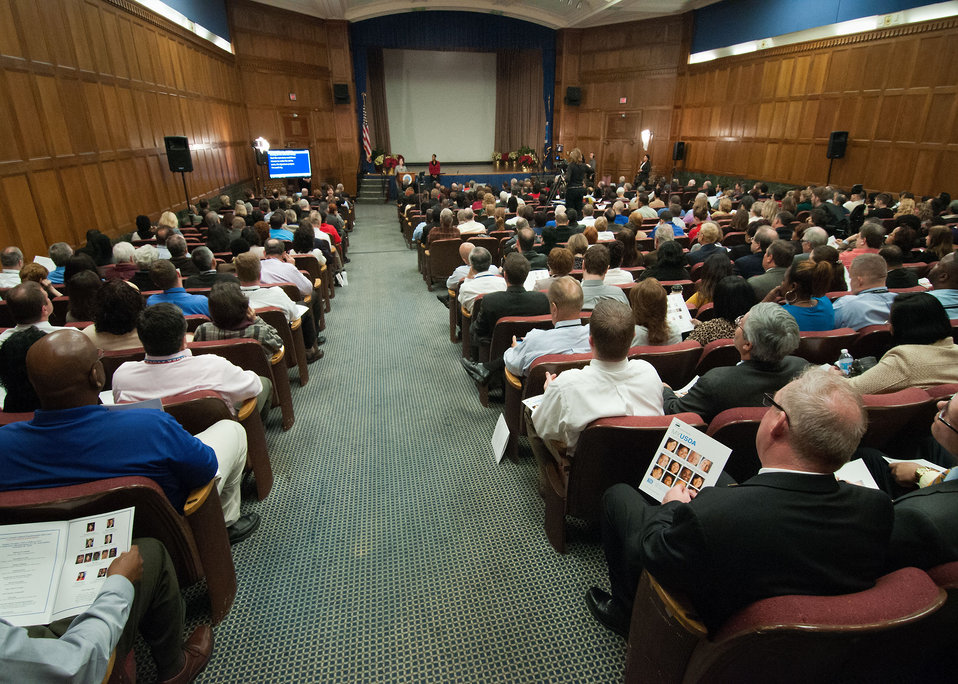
Agriculture Deputy Secretary Dr. Kathleen Merrigan introducs Agriculture Secretarty Tom Vilsack at the U.S. Department of Agriculture’s (USDA) Fourth Annual Cultural Transformation event held in Washington, D.C. on Tuesday, Dec. 4, 2012. The theme for the event “Faces of Cultural Transformation” Focusing on changing the way we serve our customers and cultural transformation’s benefits to employees.